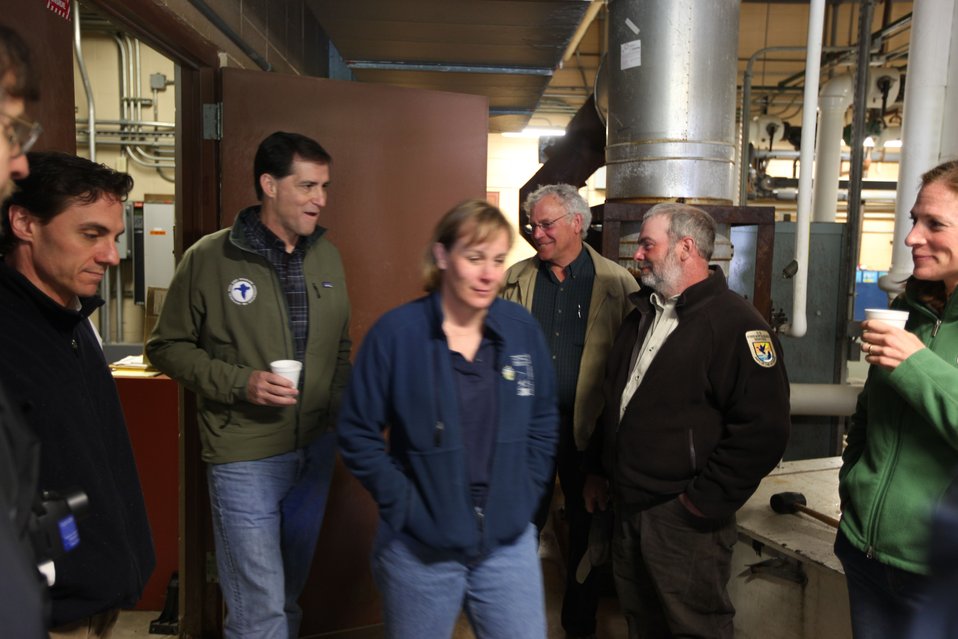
Dan Ashe gets a tour of the hatchery

U.S. Fish & Wildlife Service Director Dan Ashe visits the Northeast Region
for a tour of the White River National Fish Hatchery in Bethel, Vermont on
April 27, 2012. The hatchery was devastated by Tropical Storm Irene and
Dan Ashe had the chance to meet and thank the staff for their heroic work.
Director Ashe also visited restoration/flood response/fish passage project
sites in Rochester, Vermont and met with local officials and staff from the
White River Partnership.